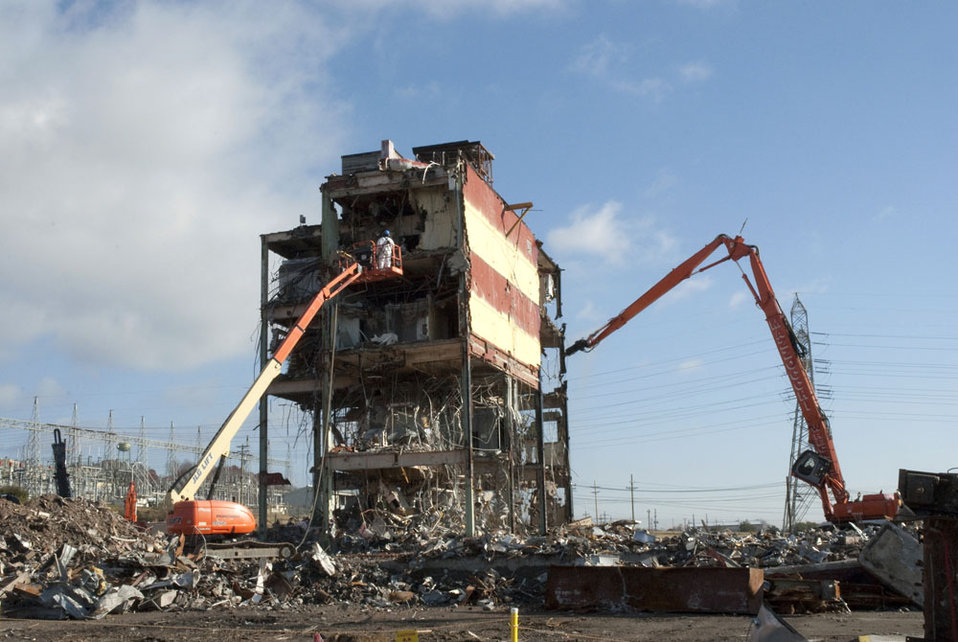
Skilled Workers Bruised by Recession Find New Start in Oak Ridge Recovery Act Work

At a little over 83,000 square feet, Building 9211 was not the largest building ever demolished at Y-12 but at four stories, it was the tallest. Special large equipment was brought on site in several pieces and assembled to complete the task.